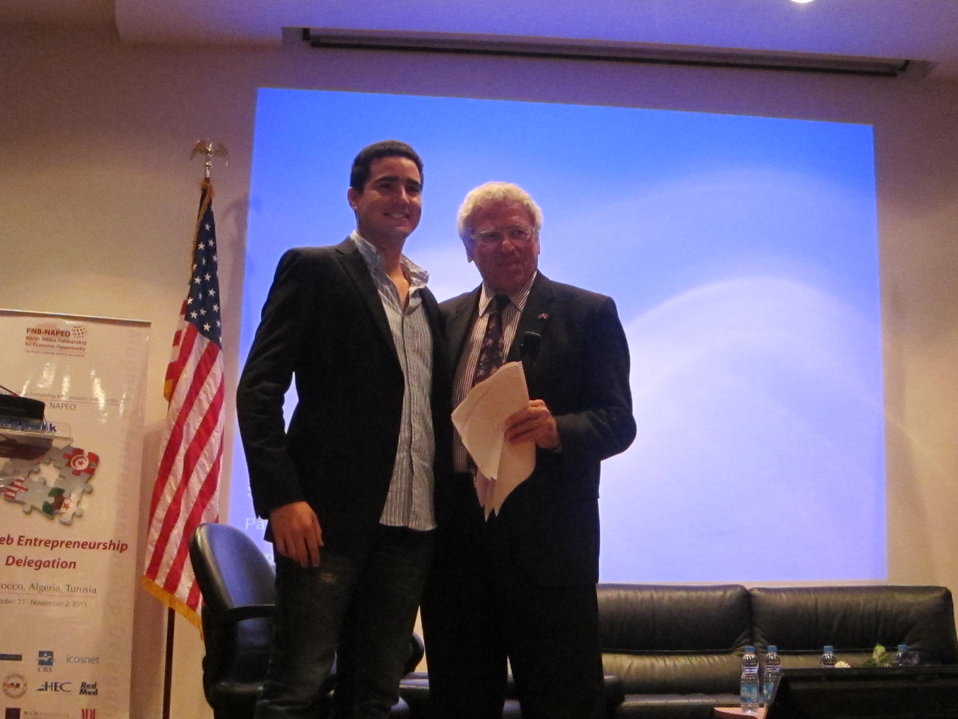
Maghreb Delegation in Morocco Winner Yassine El Kachchani Poses for a Photo With Alamiadid Founder Mohamed Yacoubi

Yassine El Kachchani, Maghreb Delegation in Morocco winner, left; poses for a photo with Mohamed Yacoubi, Founder of Alamjadid, right; one of two High-Potential Start-up winners in Morocco on October 27, 2011.